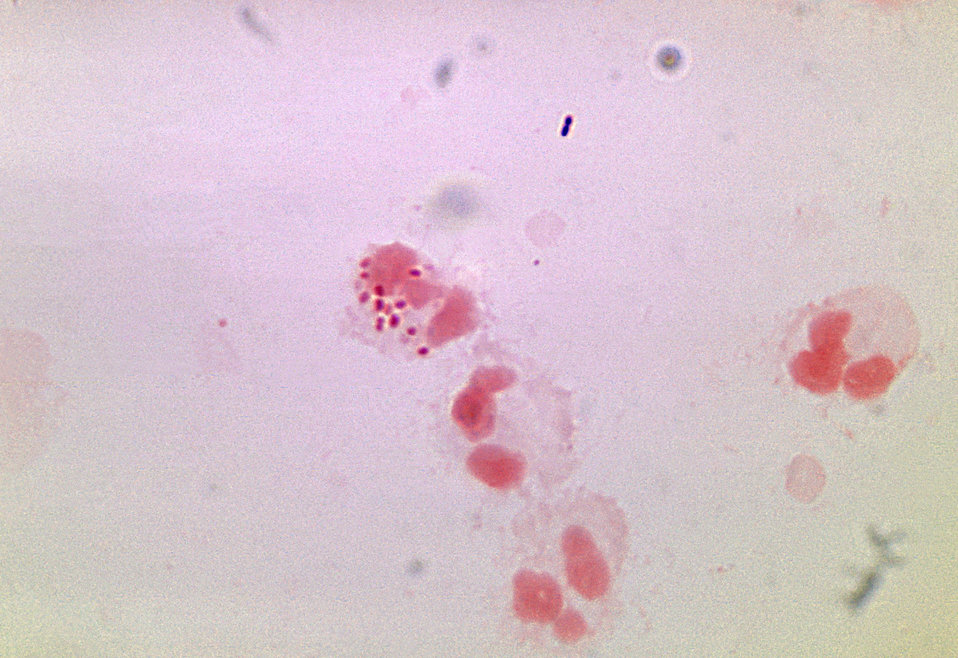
This photomicrograph depicts Neisseria gonorrhoeae bacteria within a neutrophil.